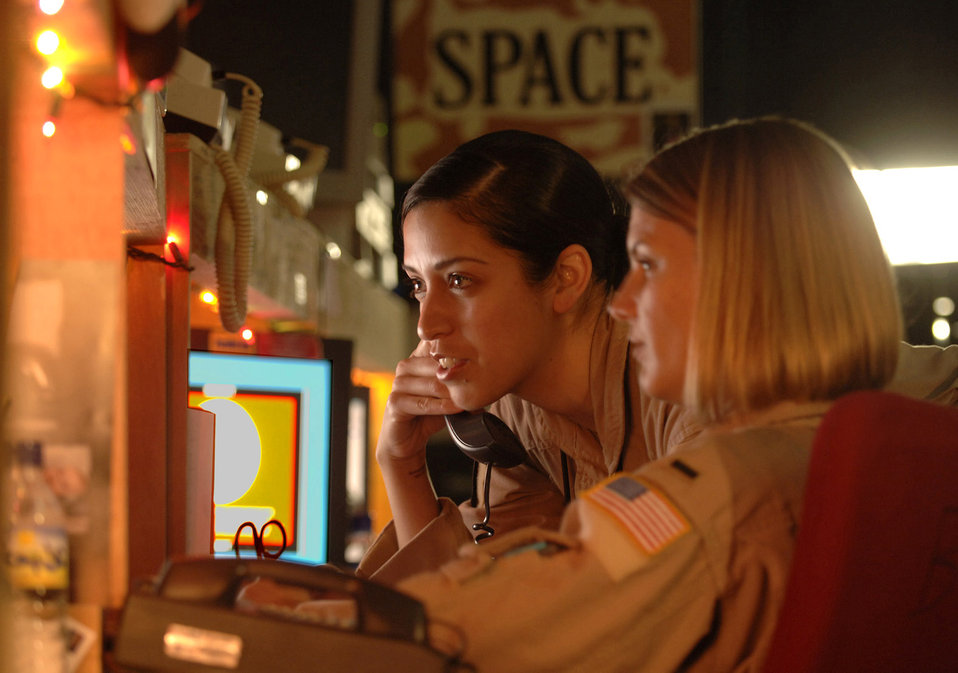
Space shapes today's front lines

Staff Sgt Cristina Kavanagh and 1st Lt. Tanya Frazier provide space-based theater ballistic warning to U.S. forces in the Southwest Asia theater from the Combat Operations Space Cell inside the Combined Air Operations Center. They also run Global Positioning Satellite predictions to ensure GPS accuracy and support combat search and rescue missions when necessary via space support. Sergeant Kavanagh is a space duty technician from Buckley Air Force Base, Colo., and Lieutenant Frazier is a space duty officer from F.E. Warren AFB, Wyo.